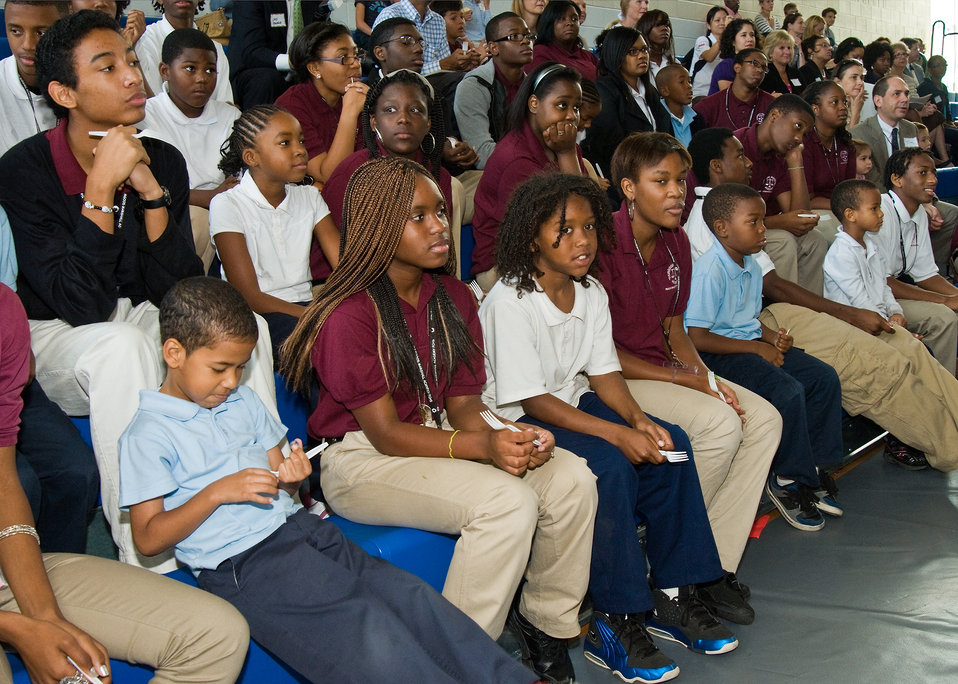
Students watch in anticipation to sample and judge the winners of the Chef Competition of the D.C. Farm to School and D.C. School Garden Week at the Savoy Elementary and Thurgood Marshall Academy shared campus in Washington, DC, Tuesday, October 12, 2010. At the event related to the Iron Chef competition local chef’s created healthy, delicious recipes using local apple varieties to be judged by the students themselves. School children and a partnership of community organizations have responded to First Lady Michelle Obama’s goal to end childhood obesity by building school gardens, providing healthier foods in school meals, and helping kids connect with local food and agriculture. USDA Photo 10di1522-32 by Bob Nichols.